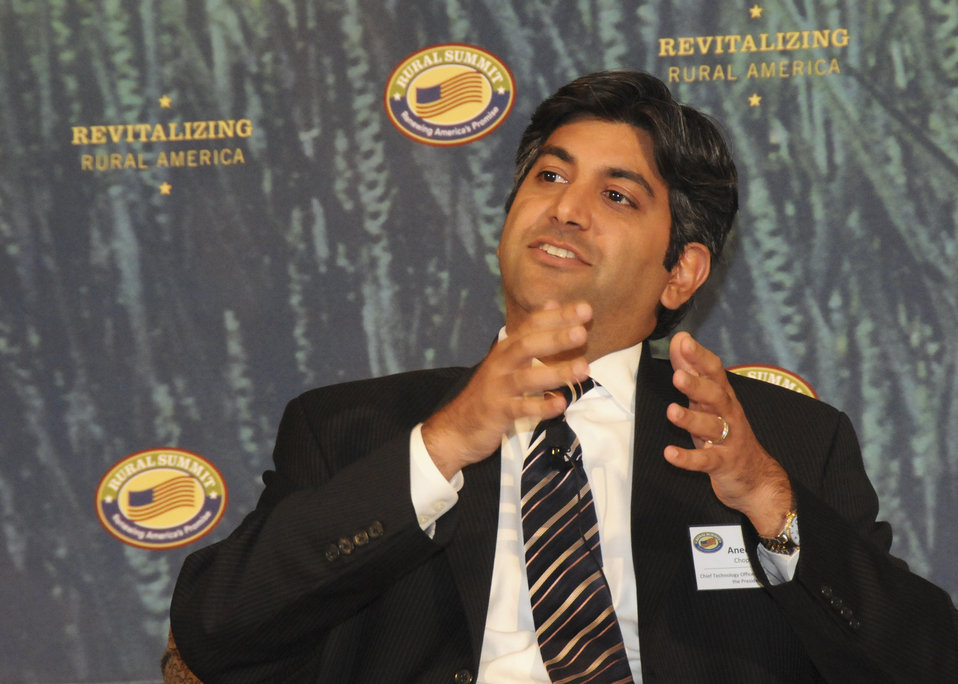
Chief Technology Officer and Assistant to the President Aneesh Chopra responds to a question during A Dialogue on Rural America discussion held at the National Rural Summit held at Jefferson College in Hillsboro, MO, on Thursday, June 3, 2010. USDA Photo 10di1386-174.